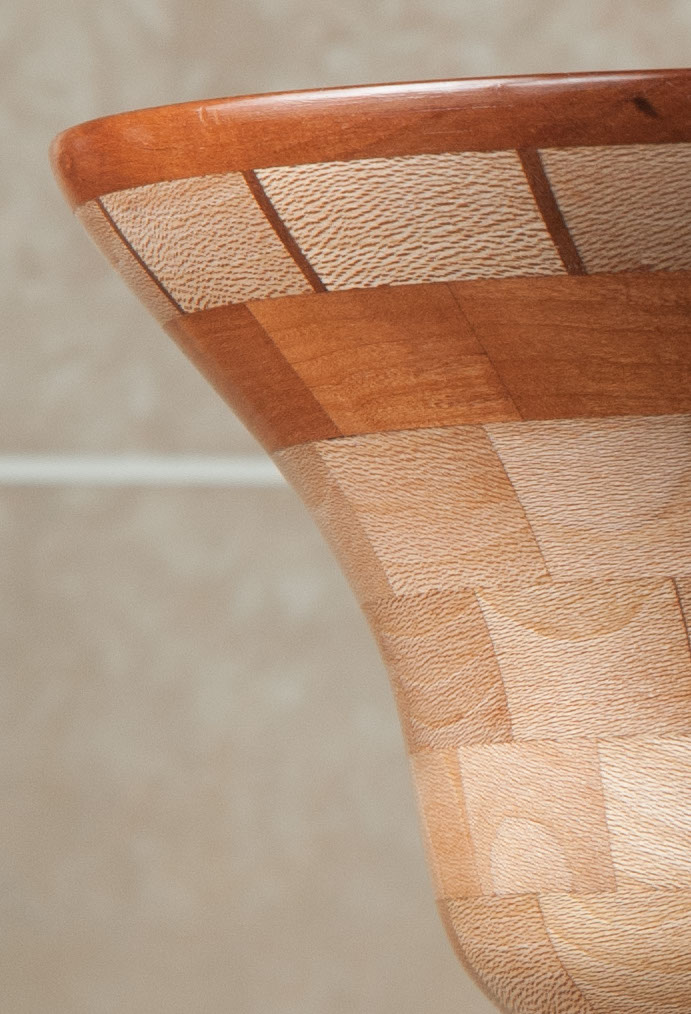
Online Viewer's Choice entries of the 2013 Art & Agriculture, Tuesday, July 9, 2013, in the South Building, Washington, D.C. Themes were expressed by employees from across the department and the contest was open to full-time and part-time USDA employees. Winning artwork will be displayed till the end of the year. U.S. Artistic expression is a creative outlet that is vital for an individual to grow and develop.